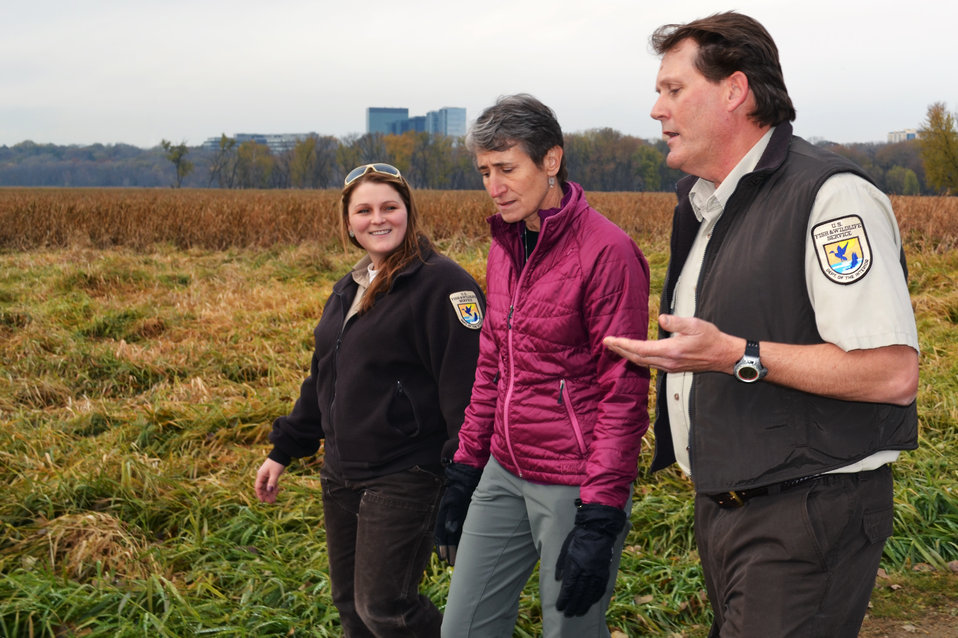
Restoring Wetlands

Learning about wetland restoration from Minnesota Valley National Wildlife Private Lands Biologist Mike Malling.